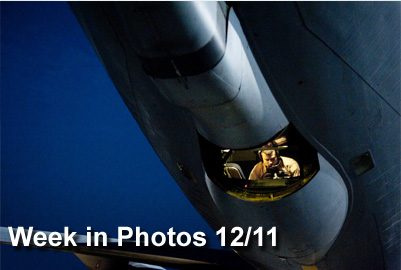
Week in Photos 12/11

Air Force Week in Photos for Dec. 11 highlights photos from around the Air Force. In this photo by Staff Sgt. Robert Barney, Senior Airman Andrew Deck, 340th Expeditionary Air Refueling Squadron boom operator, conducts a KC-135 Stratotanker preflight check at an airfield in Southwest Asia.